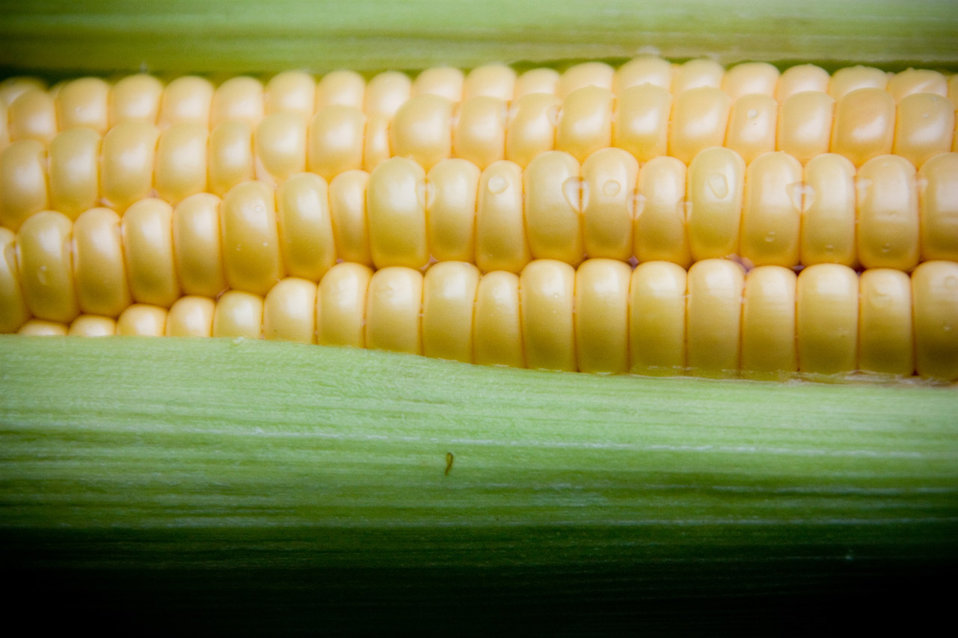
Sweetcorn - vegetable.